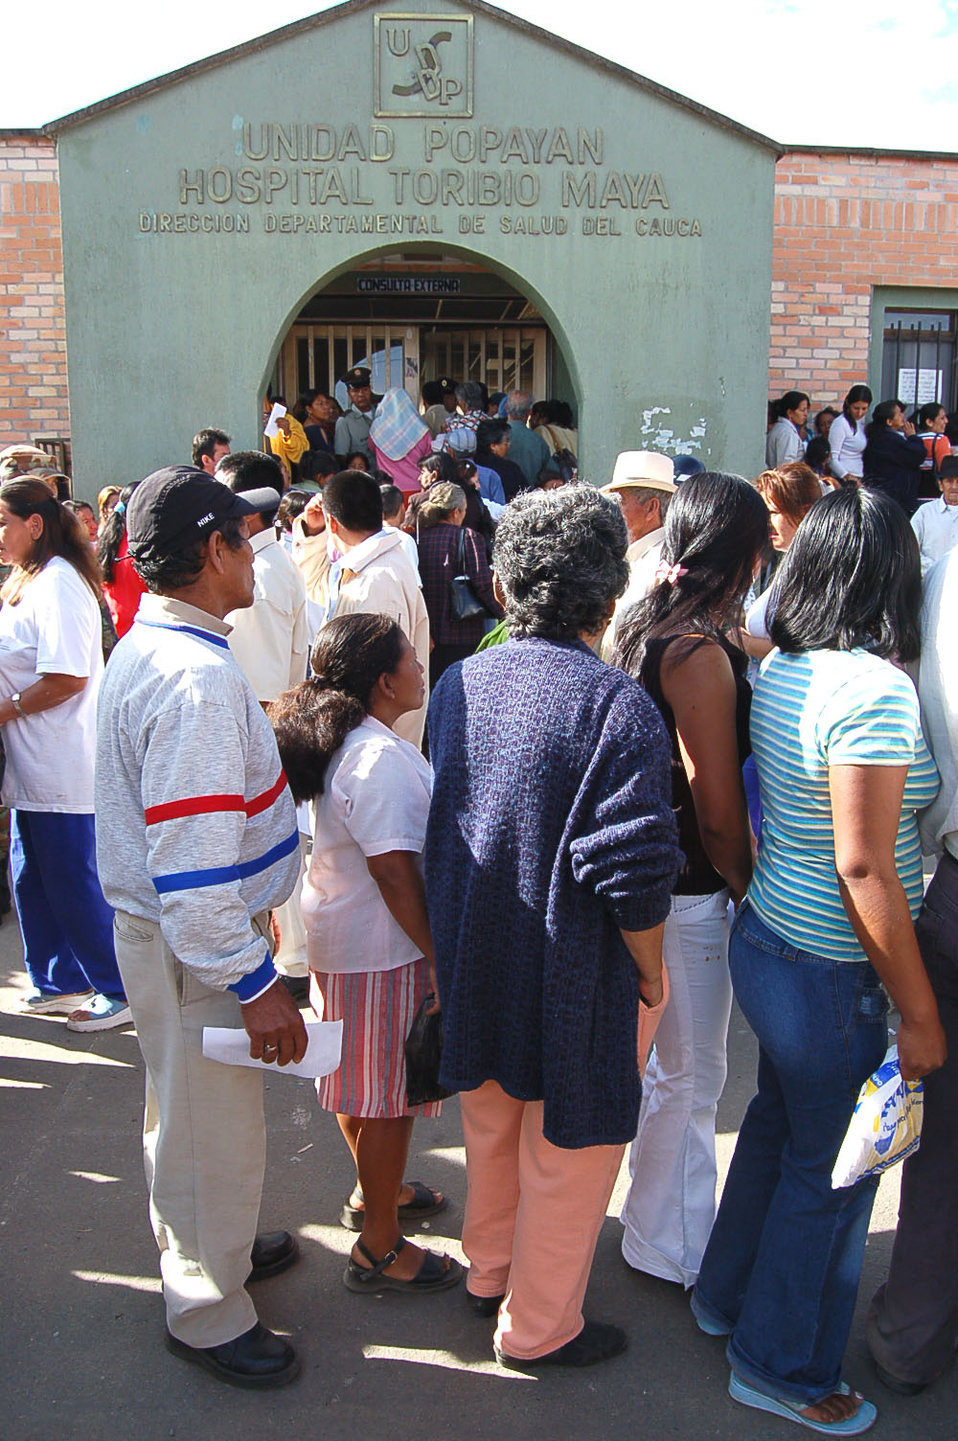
Airmen provide medical assistance in Colombia

People gather outside the Hospital Toribo Maya in Popayan, Colombia, Sept. 12 to receive treatment from a U.S. medical team performing a medical readiness training exercise.